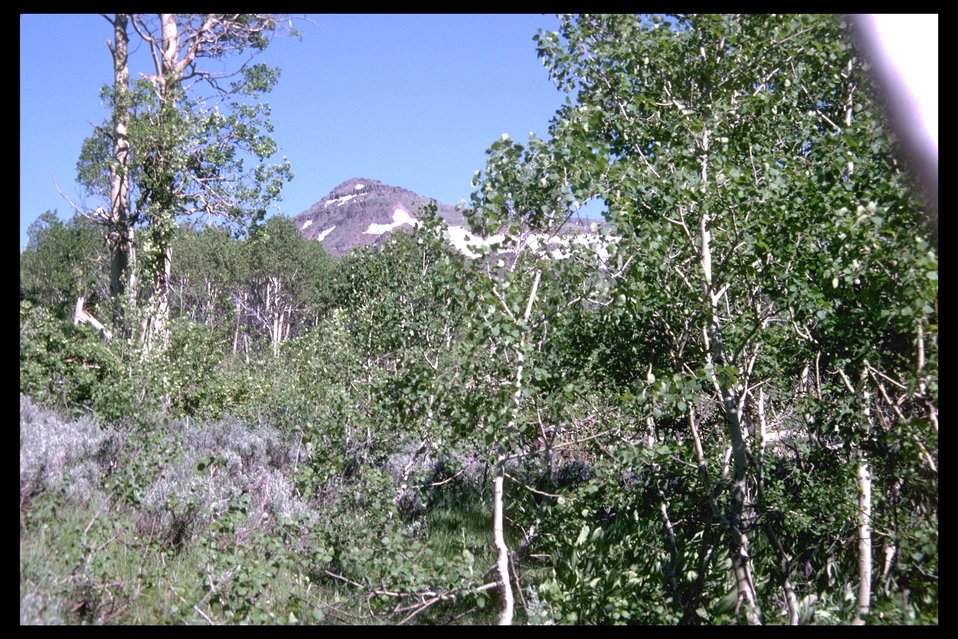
High Steens within Little Indian Gorge looking through aspen to Headwall. (WSA 2-85F)